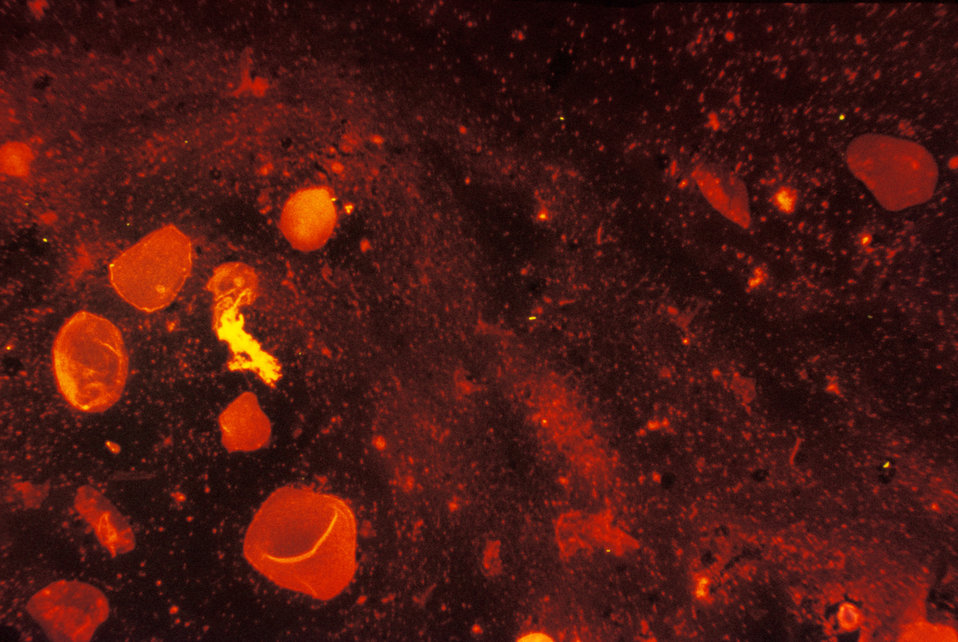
Here we see Mycobacterium tuberculosis in a sputum smear is stained using fluorescent acid-fast stain.